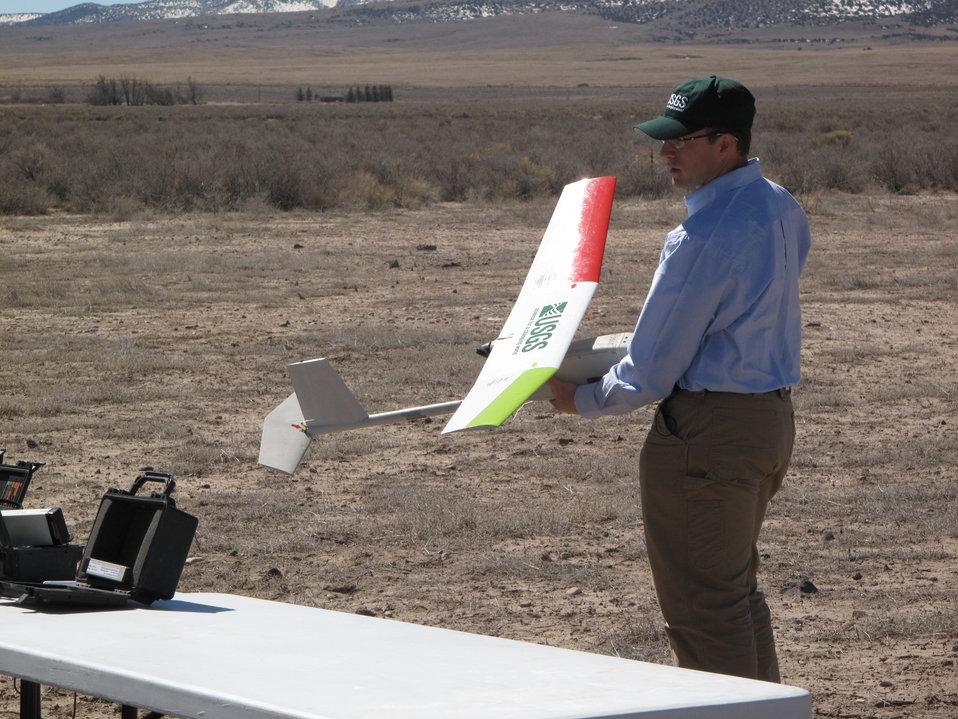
Prepping for Takeoff

The U.S. Geological Survey, U.S. Fish & Wildlife Service and Bureau of Land Management conducted a demonstration of Unmanned Aircraft Systems (UAS) as a means of surveying migratory birds March 22, 2012. The goal of the feasibility study was to test the UAS technology as a means of surveying migratory Sandhill Cranes roosting on the Monte Vista Wildlife Refuge in the San Luis Valley of Colorado.